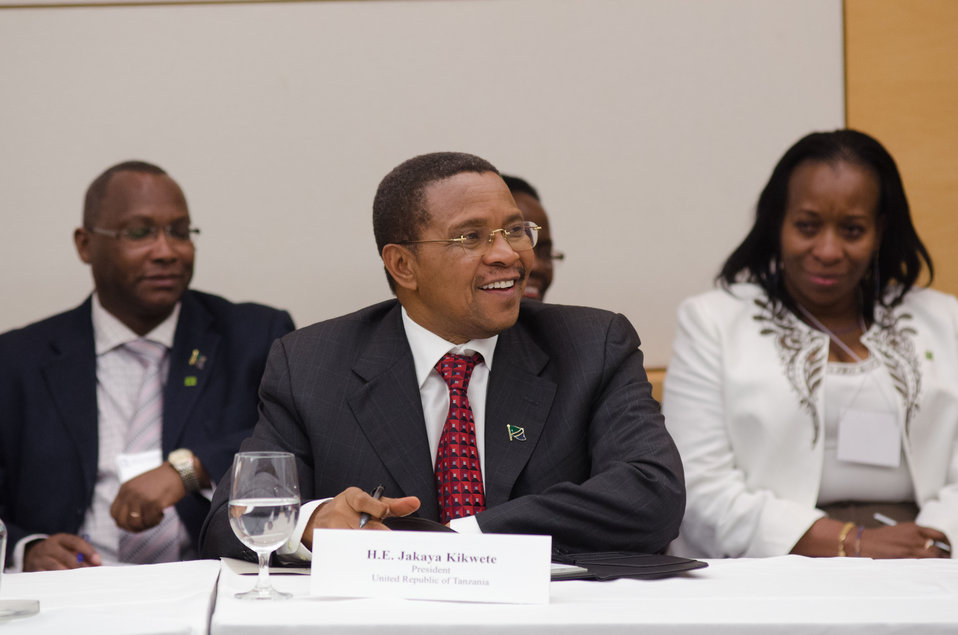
President of the United Republic of Tanzania His Excellency Jakaya Kikwete makes remarks at the African Heads of State conference at the Ronald Reagan Federal Building in Washington, D.C., on Friday, May 18, 2012.